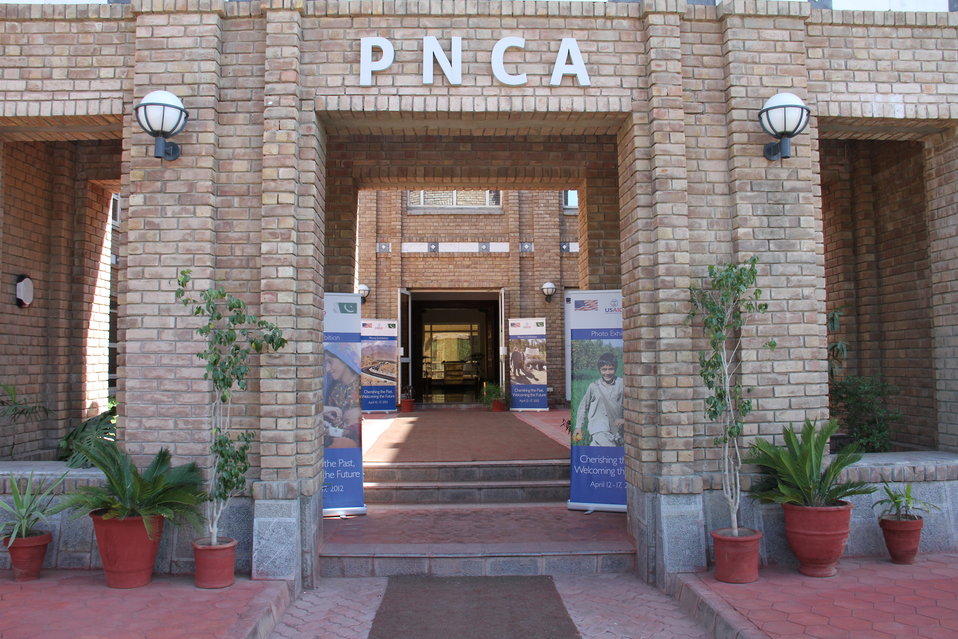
Photo Exhibition Celebrate US-PAK Cooperation at PNCA, Islamabad on April 13, 2012